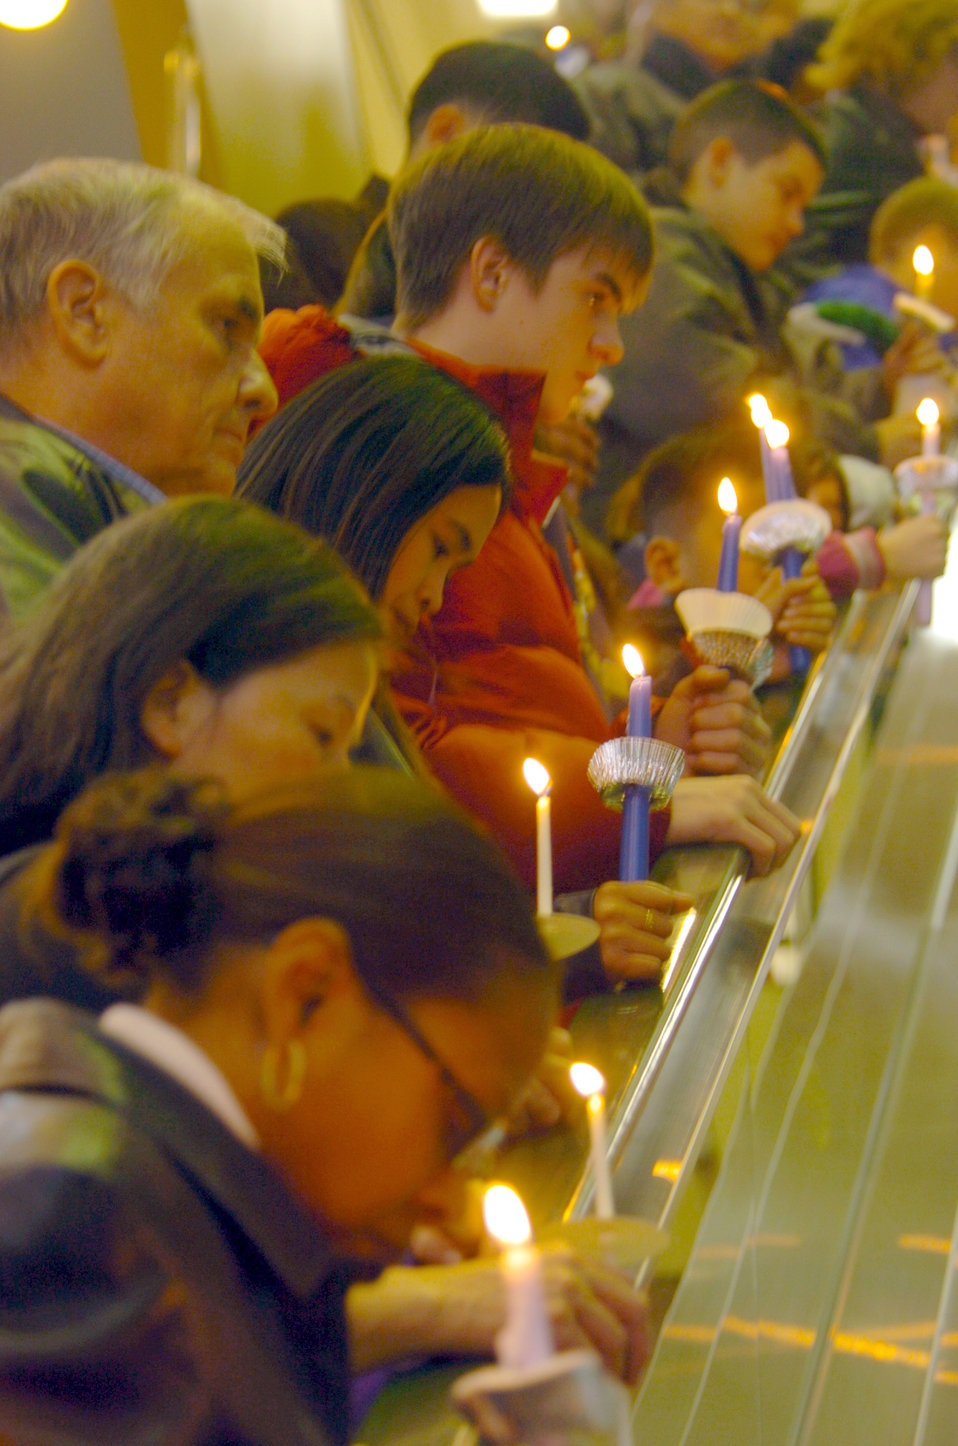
Candlelight vigil

YOKOTA AIR BASE, Japan -- People held a candlelight vigil here Feb. 11 for deployed troops. About 200 people paid tribute to American forces participating in various deployments worldwide. The ceremony included songs and prayers for the troops.